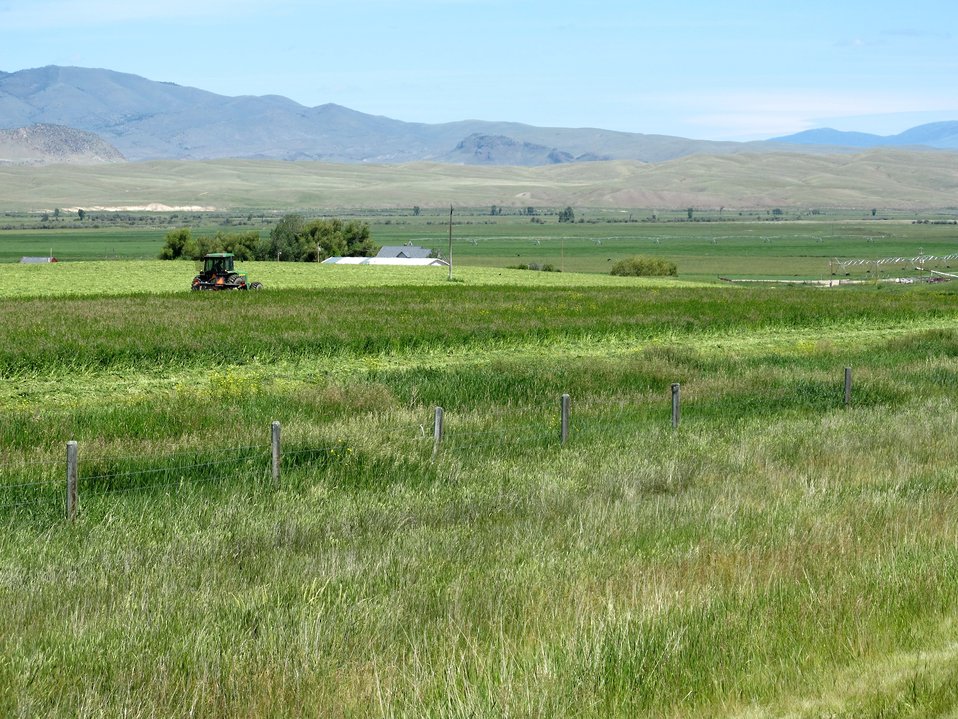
Mowing the grass - Montana style. Haying is a major cash crop as summers are too short for other crops.